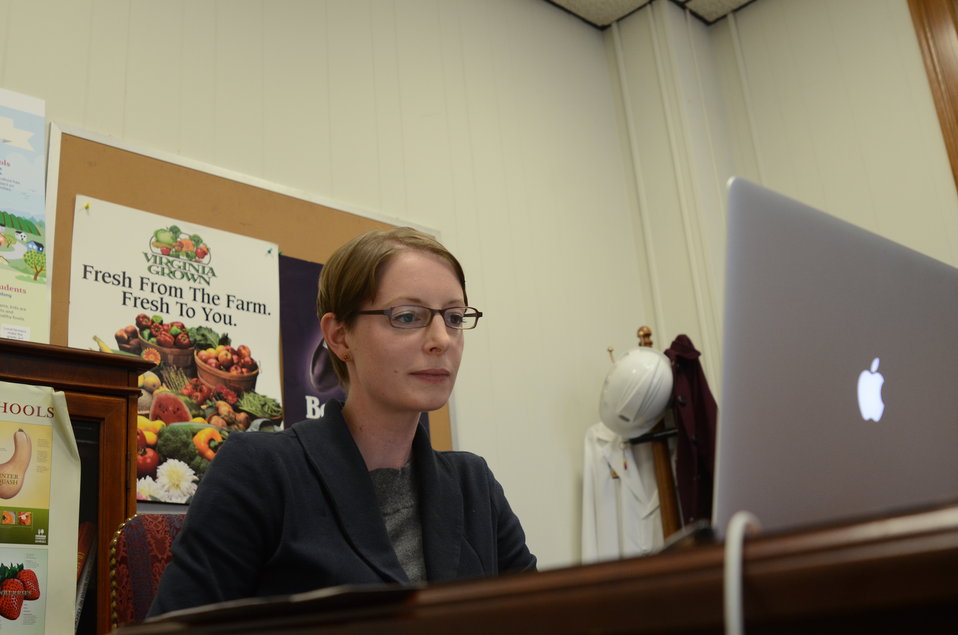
U.S. Department of Agriculture (USDA) National Coordinator for Local and Regional Food Systems Elanor Starmer leads a live Google Hangout to discuss the importance of a comprehensive Food, Farm and Jobs Bill to local and regional food systems at USDA on Thursday, Nov. 21, 2013.